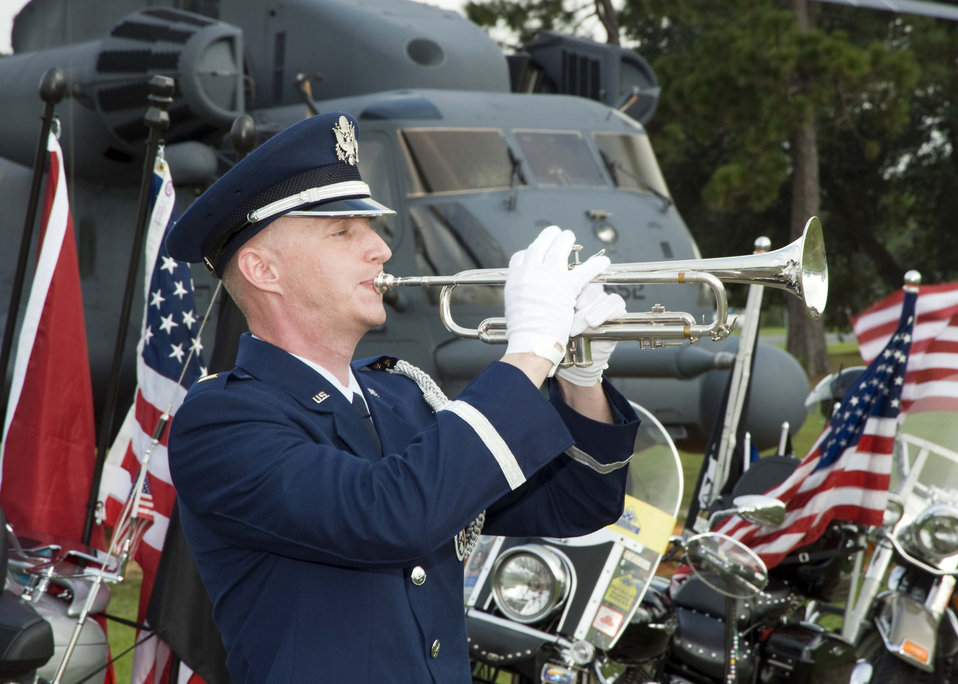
Airmen honor the fallen

First Lt. Adam Baker plays